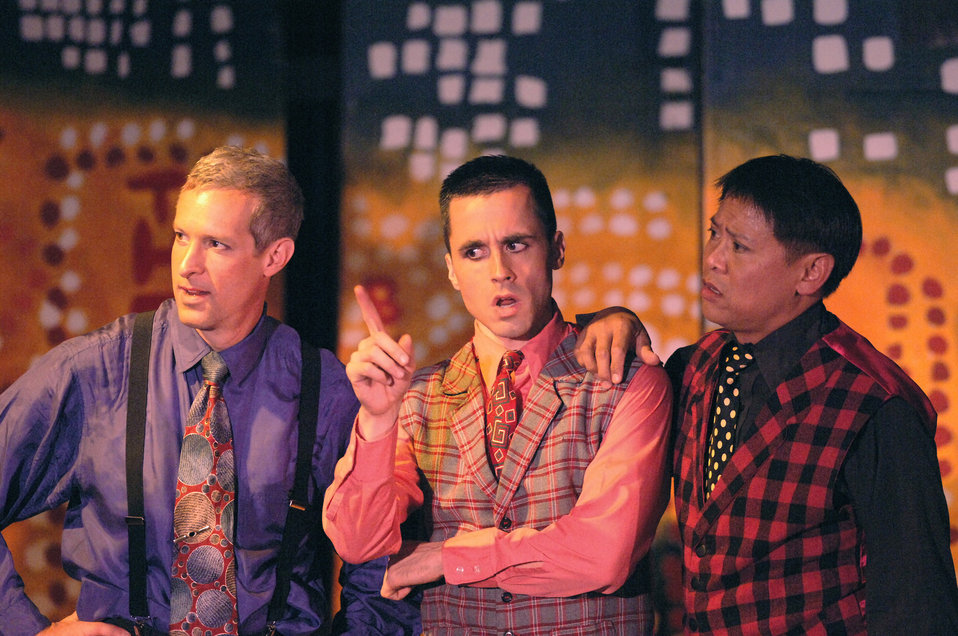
Top performers

YOKOTA AIR BASE, Japan (AFPN) -- (Left-right) Bren Shuler, Nate Popp and Bruce Gomez, all members of the Yokota Players, perform in a